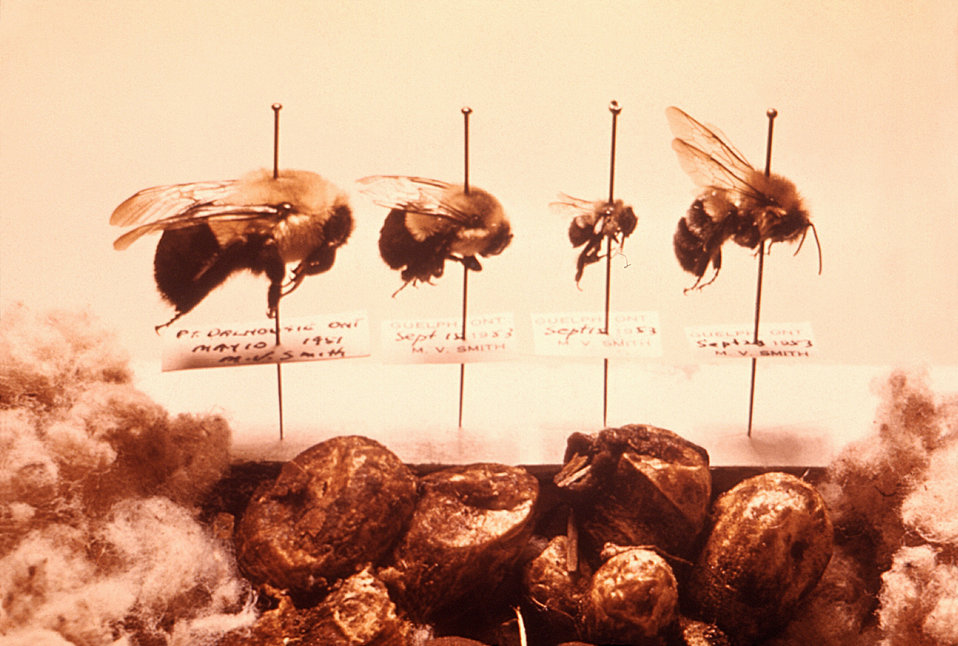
This image depicts a collection of bumblebee specimens, Bombus impatiens, collected in the early 1950s in Ithaca, N.Y.